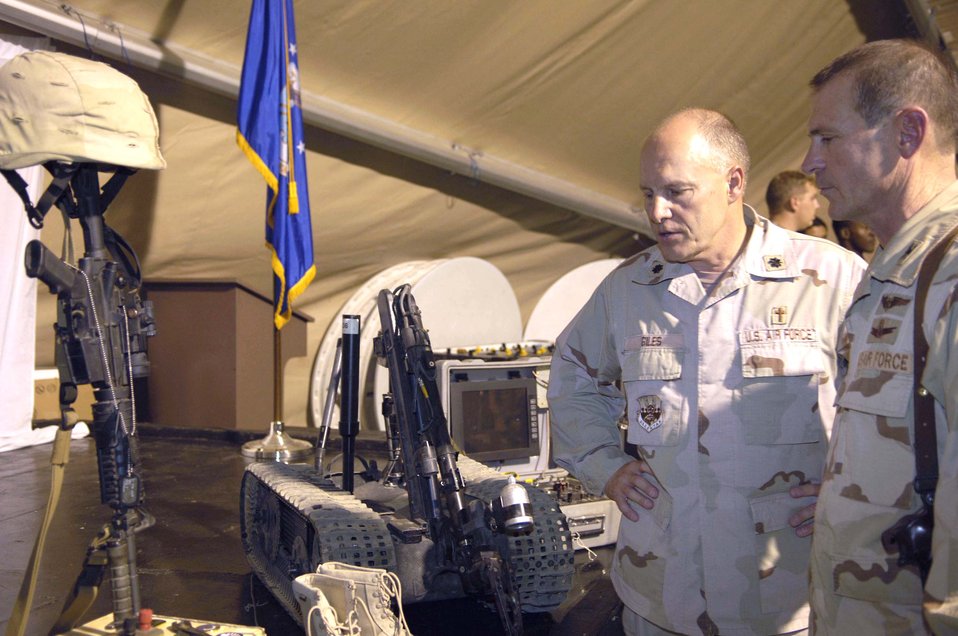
Airmen, Soldiers say farewell to comrade in Iraq

Observing a quiet moment after the memorial service for Master Sgt. Brad A. Clemmons, Chaplain (Lt. Col.) Stan Giles and Col. Duane D. Lamb pay their respects at a memorial made of explosive ordnance tools Aug. 24 at Balad Air Base, Iraq. Sergeant Clemmons died Aug. 21 when his vehicle struck an improvised explosive device near Taji, Iraq. Chaplain Giles is the 732nd Expeditionary Mission Support Group chaplain and Colonel Lamb is the group commander.